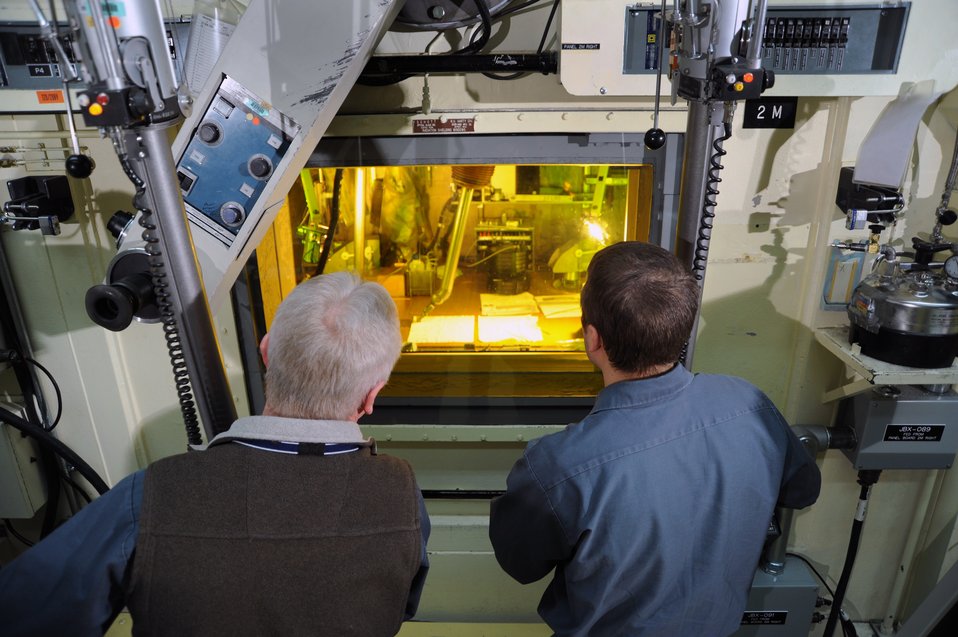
NUCLEAR ENERGY RESEARCH TAKING PLACE AT IDAHO NATIONAL LABORATORY'S HOT FUEL EXAMINATION FACILITY.